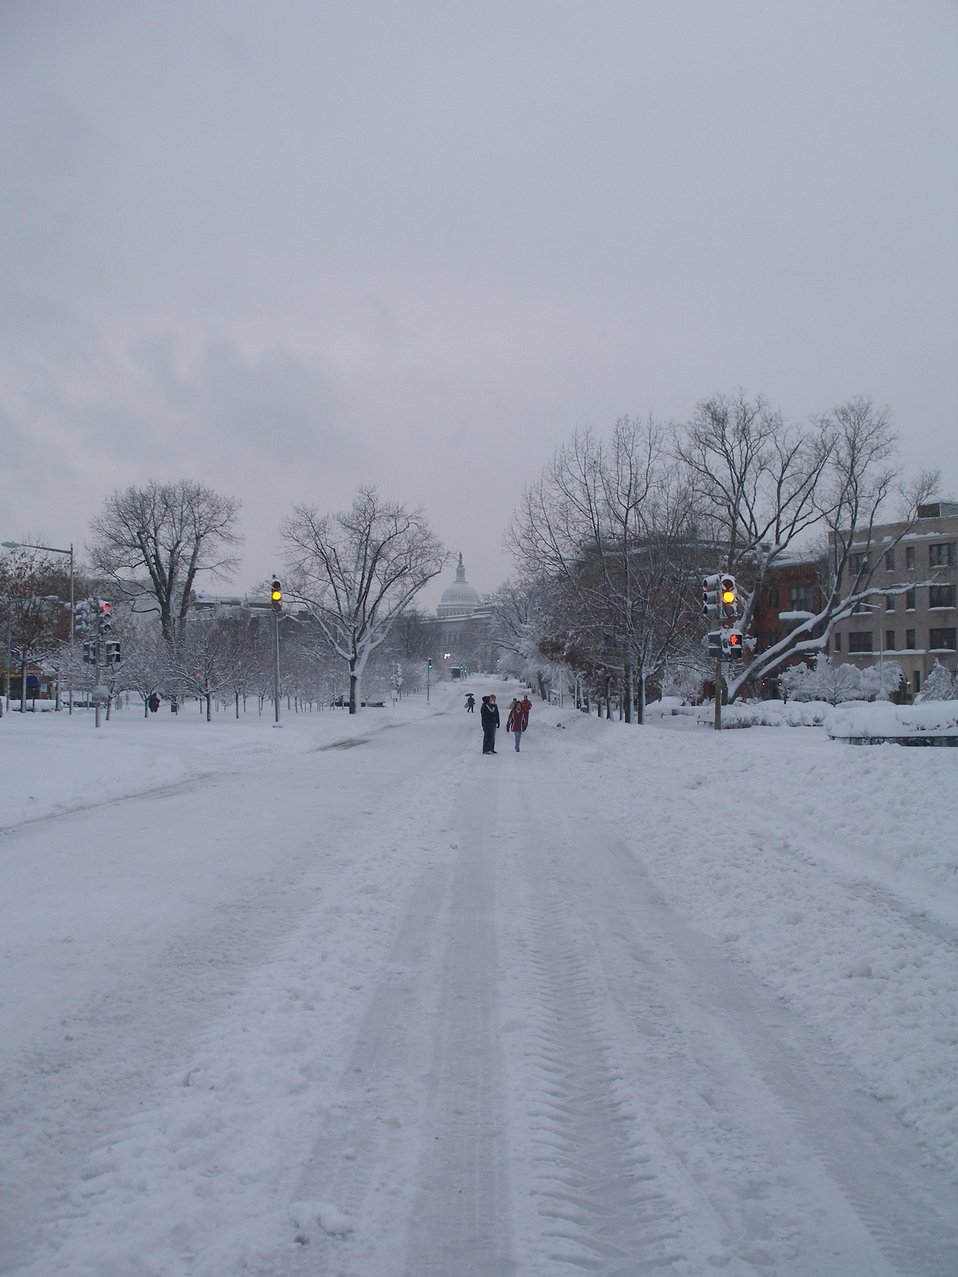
People out enjoying the Capitol Hill area of DC on a vehicle-deserted street following the February 5-6 snowstorm. Pennysylvania Avenue, one of the busiest automobile thoroughfares in DC.